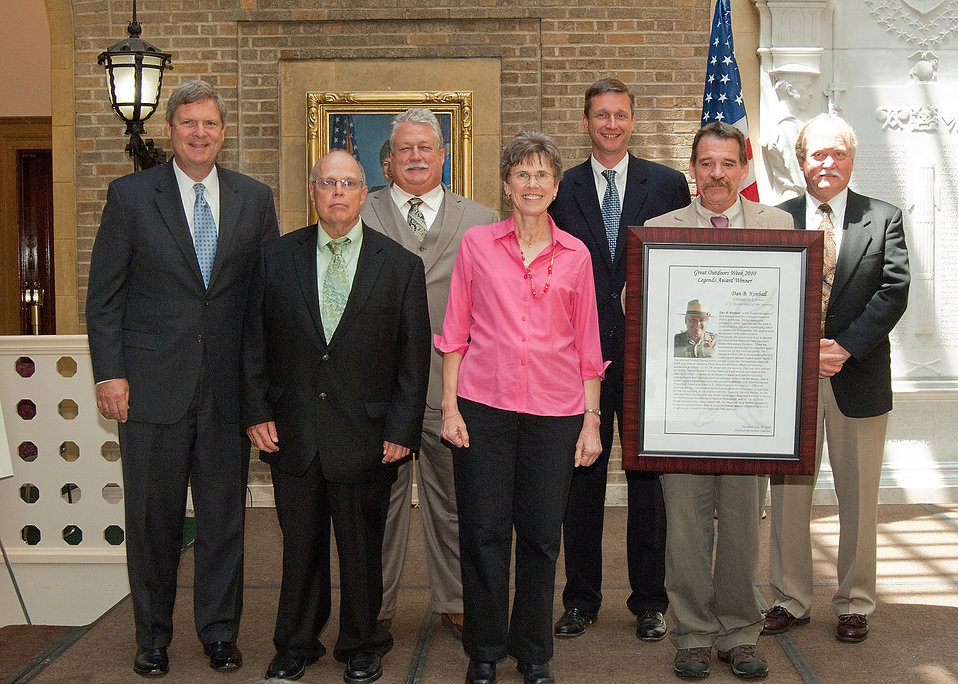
Agriculture Secretary Tom Vilsack, William Boggs, Department of Interior, Bureau of Land Management, Floyd Allen Thompson, U. S. Forest Service, Nancy Haugen, Department of Interior, U.S. Fish and Wildlife Service, Robert Morris, Department of Transportation, Federal Highway Administration, Dan Kimball, Department of Interior, National Park Service and James Lynch, Department of Defense, U.S. Army Corps of Engineers pose for a photograph at the United States Department of Agriculture and American Recreation Coalition presentation for the 2010 Legends awards during Great Outdoors Week. The American Recreation Coalition presents its Legends awards to six federal managers in recognition of their outsanding work to improve outdoor recreation and opportunities. The award program was held on the patio of the Department of Agriculture in Washington, DC, Thursday, June 10, 2010. USDA Photo 10di1398-05.